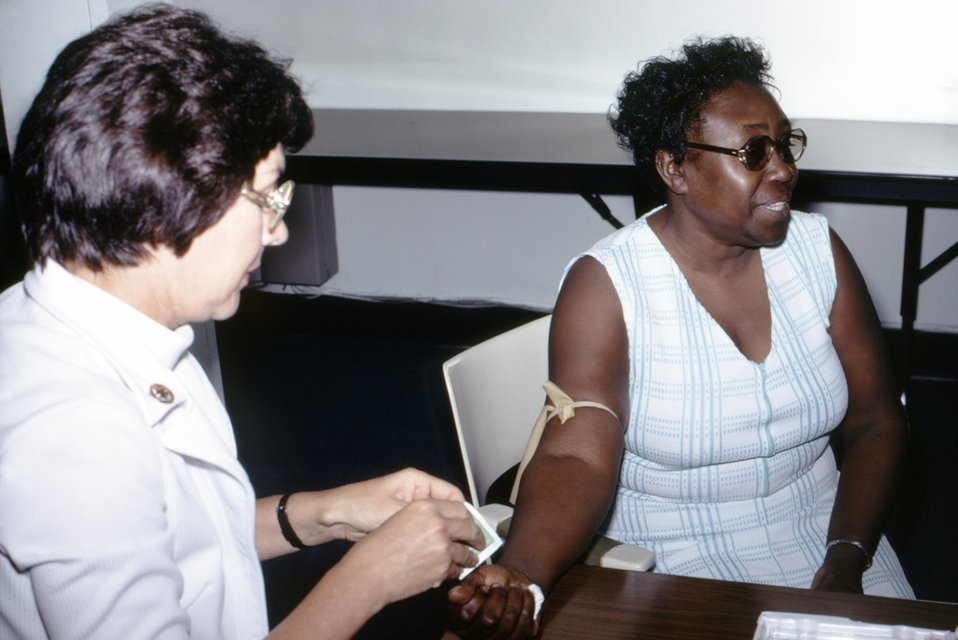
This Red Cross volunteer was drawing blood to be tested for its concentration of antibodies during a 1976 influenza (swine flu) outbreak.